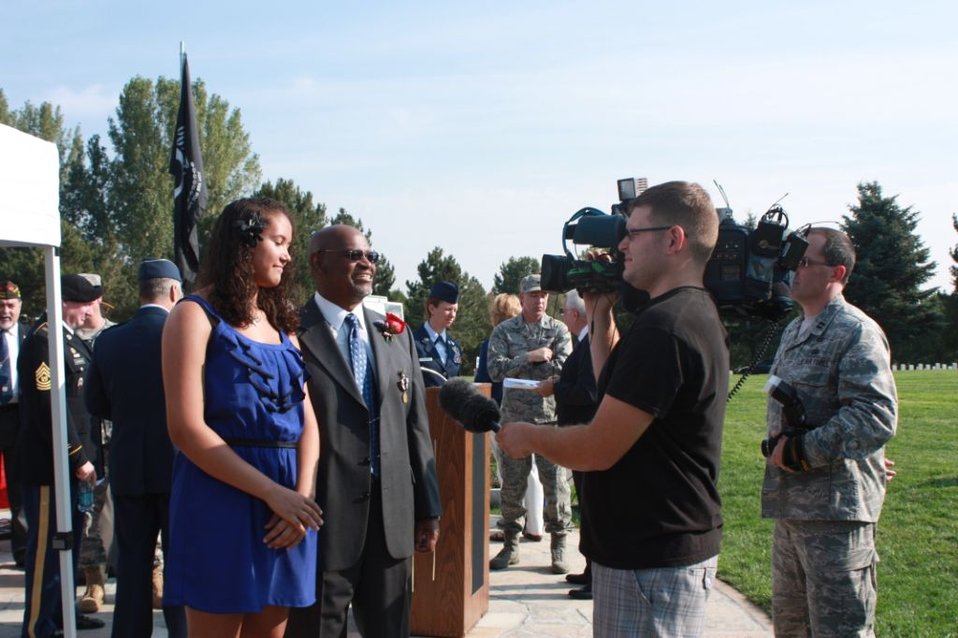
POW Medal ceremony

Retired Master Sgt. James Hughes, middle, accompanied by his step-daughter Kalee Maricle-Hughes, left, answers questions to local media after the POW Medal ceremony at Fort Logan National Cemetery, Denver, Colo., Aug. 22, 2012. Hughes has been taken as hostage in Iran for 16 days, beginning Nov. 4, 1979 and after 32 years recently received the POW Medal in recognition of his sacrifices.